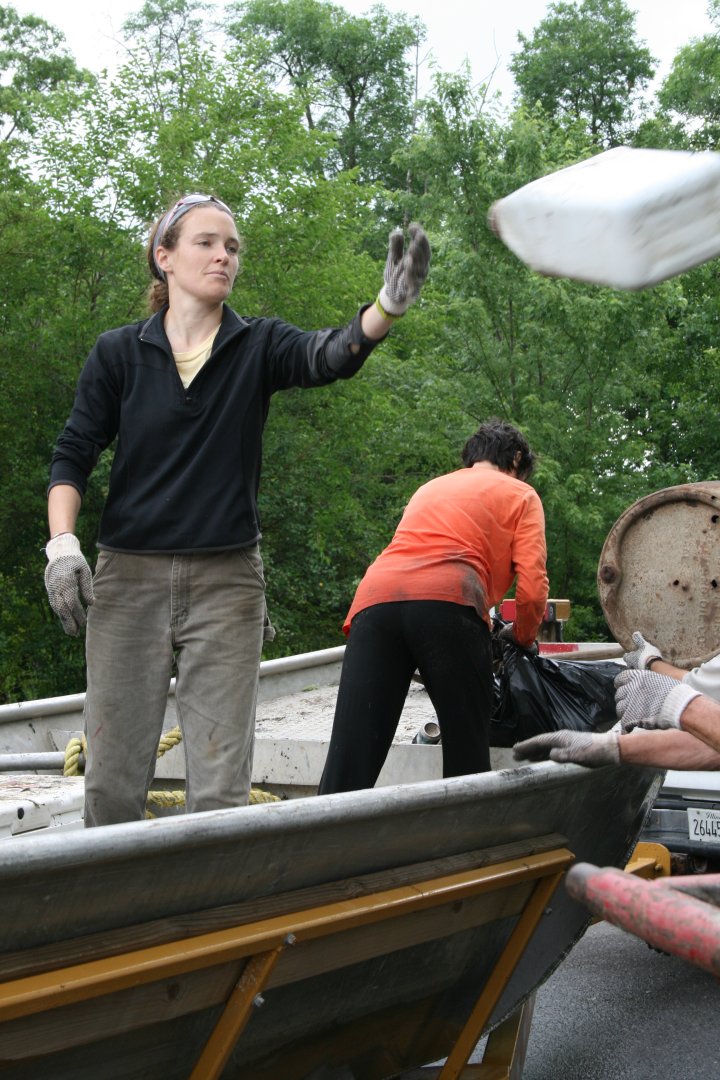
Sarah tosses a jug into the dumpster

Volunteer Sarah tosses a jug into the dumpster during The Great Mississippi River Cleanup held June 16, 2012 on the Winona District.